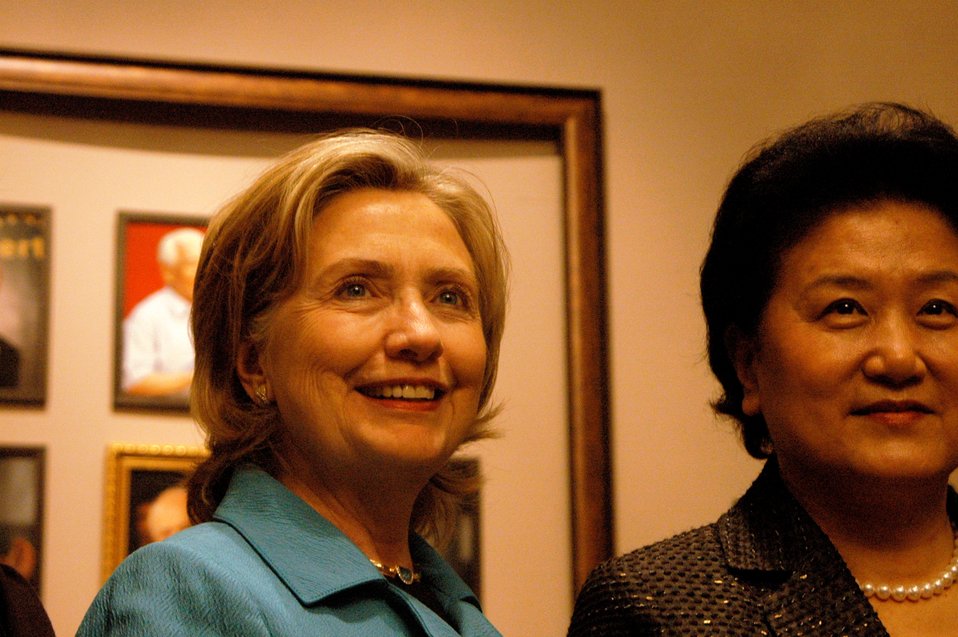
Secretary Clinton and Chiense State Councilor Liu Yandong Meet With Chinese Women Civil Society Leaders

U.S. Secretary of State Hillary Rodham Clinton and Chinese State Councilor Liu Yandong meet with Chinese Women Civil Society Leaders in Beijing, China, May 26, 2010.